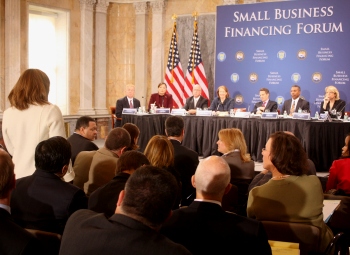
Treasury and SBA Host a Small Business Financing Forum

Small business owners, Administrator Mills and Secretary Geithner hear concerns and comments from the audience composed of policymakers, lenders and small business owners.